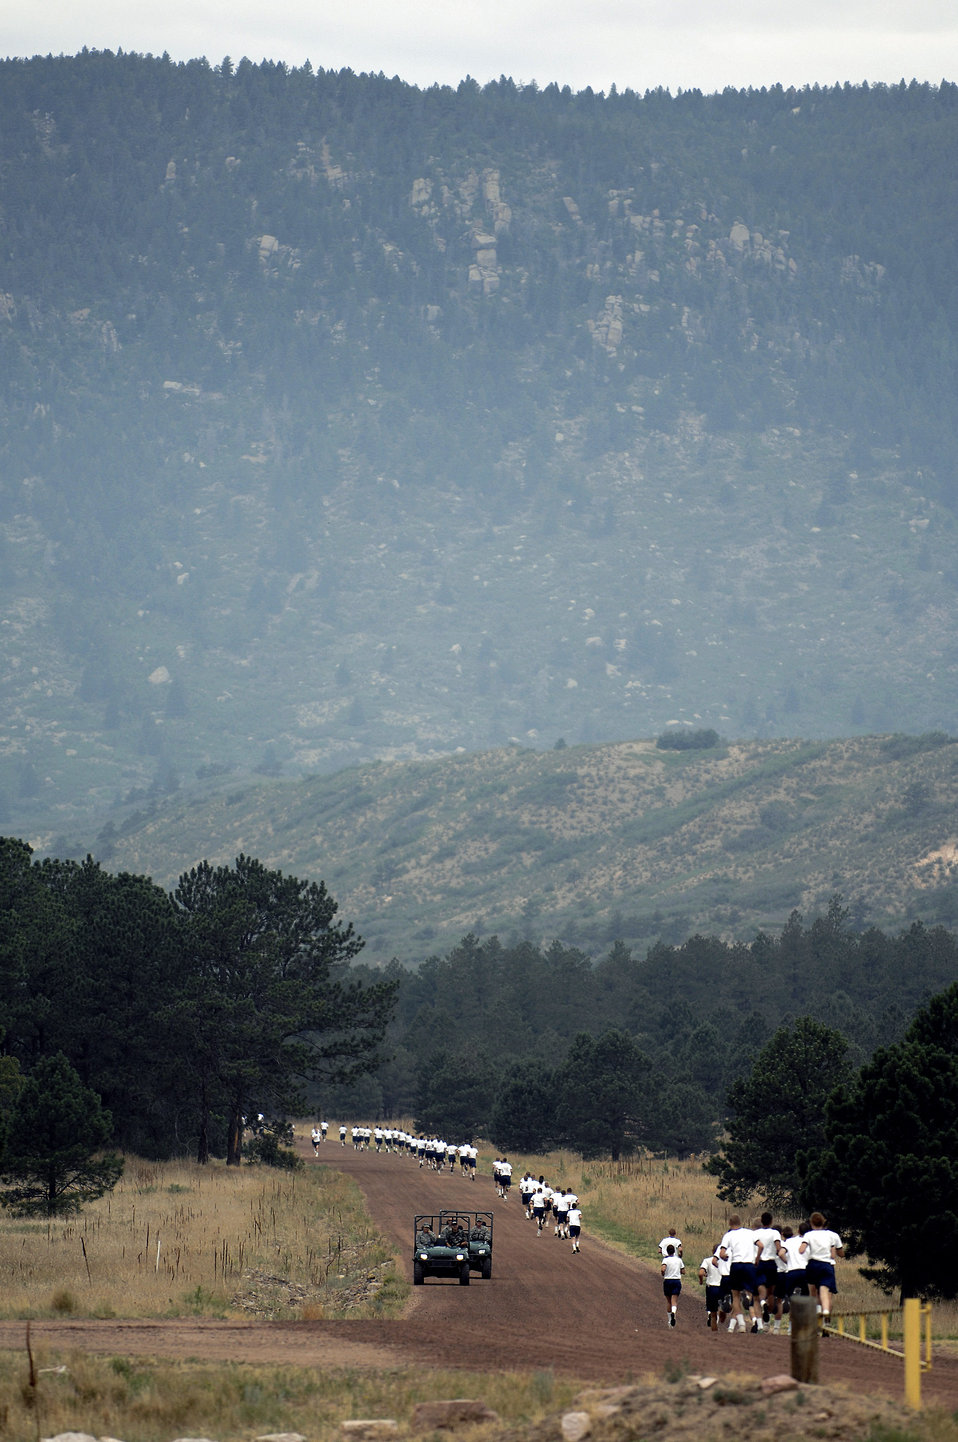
Jacks Valley

U.S. Air Force Academy basic cadets compete in a long distance run on the final day of training in the Jacks Valley training area July 26.